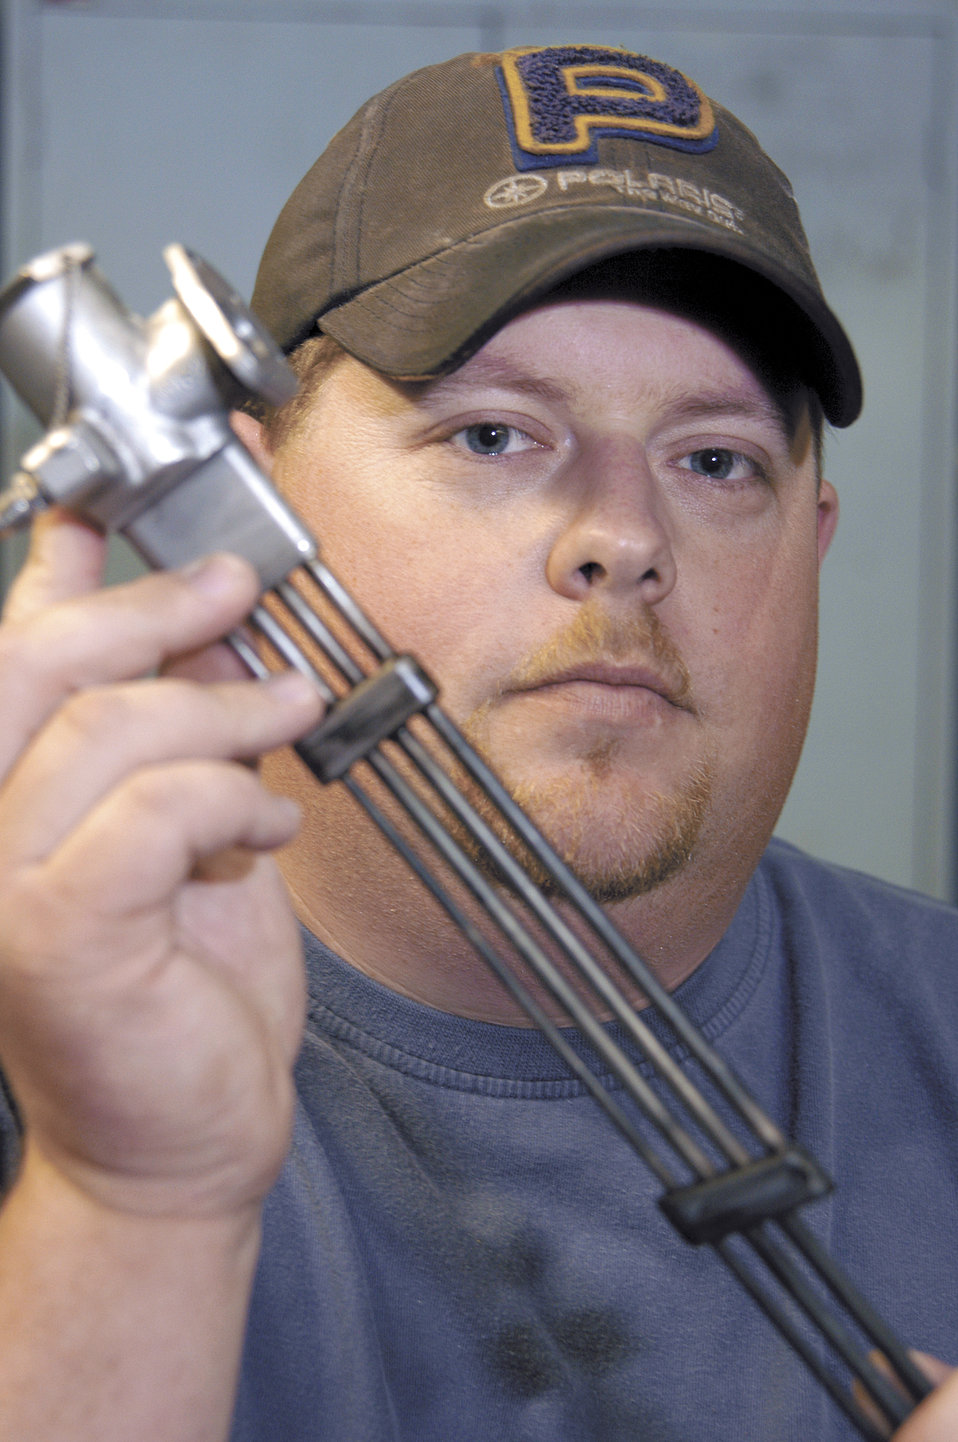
Great idea saves Air Force money

TINKER AIR FORCE BASE, Okla. -- Kent Johnson's simple solution cleaned the thin tubes of an aircraft engine's augmenter fuel nozzle, saving the Air Force big money and earning him a $10,000 award through the Innovative Development through Employee Awareness program. He is a pneudrolics mechanic with Oklahoma City Air Logistics Center's fuel accessories shop here.